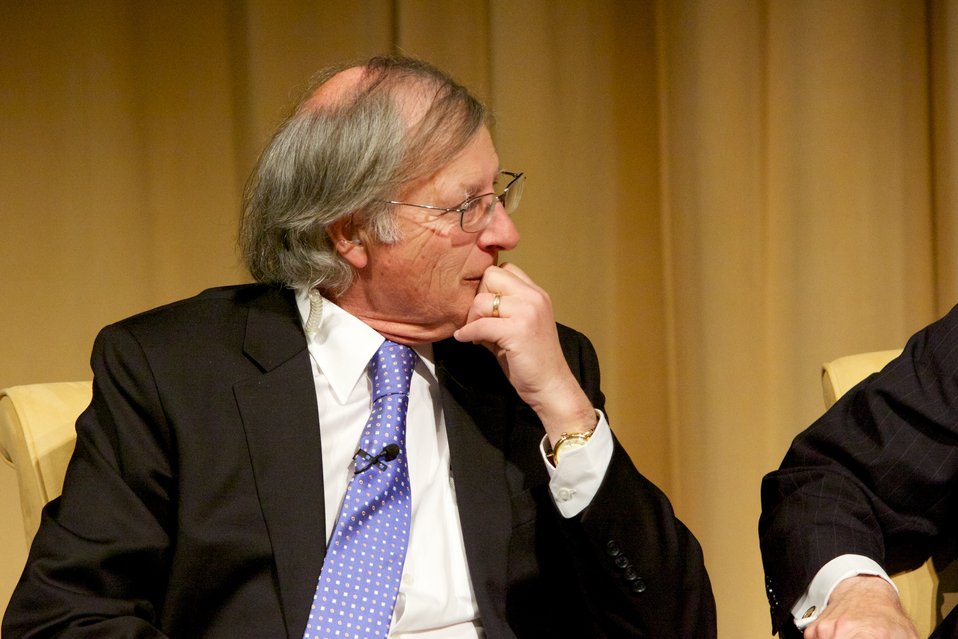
The Monuments Men; Greg Bradsher, archivist